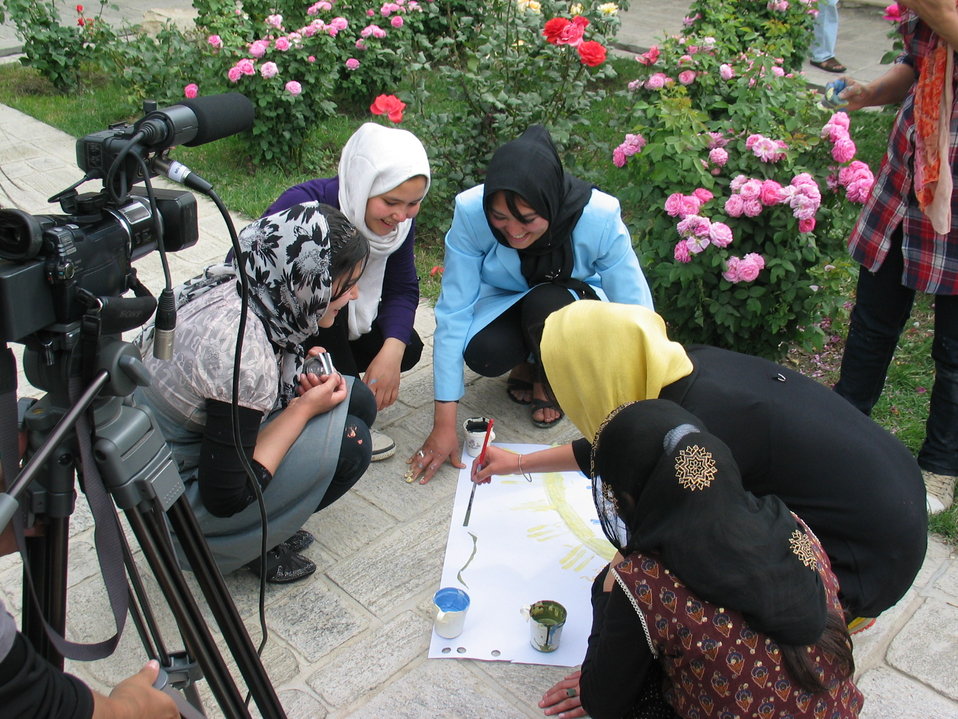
Afghan Youth Voices 013